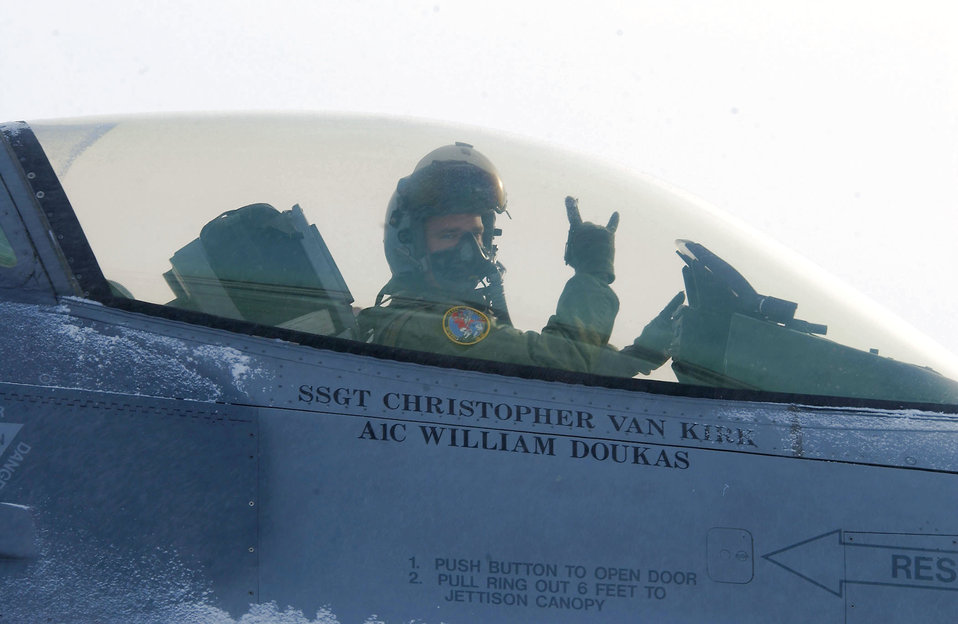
Red Flag-Alaska pilots engage in realistic combat scenarios

Capt. Bryan Spence signals from an F-16 Fighting Falcon while moving down the flightline for a Red Flag-Alaska 08-2 mission April 8 at Eielson Air Force Base, Alaska. Captain Spence is assigned to Misawa Air Base, Japan.